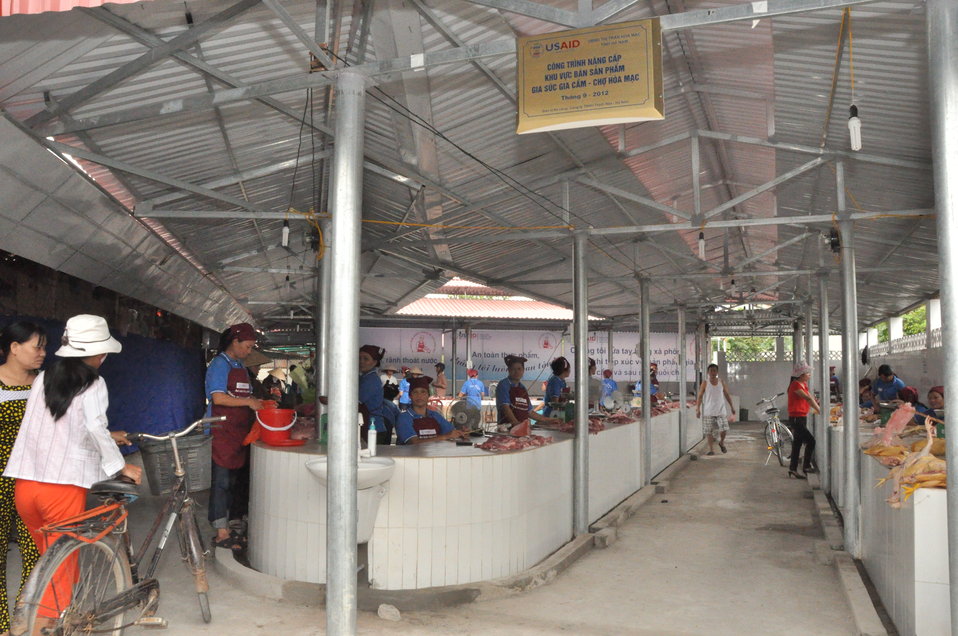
Handover Ceremony Hoa Mac Market Ha Nam

October 26, 2012